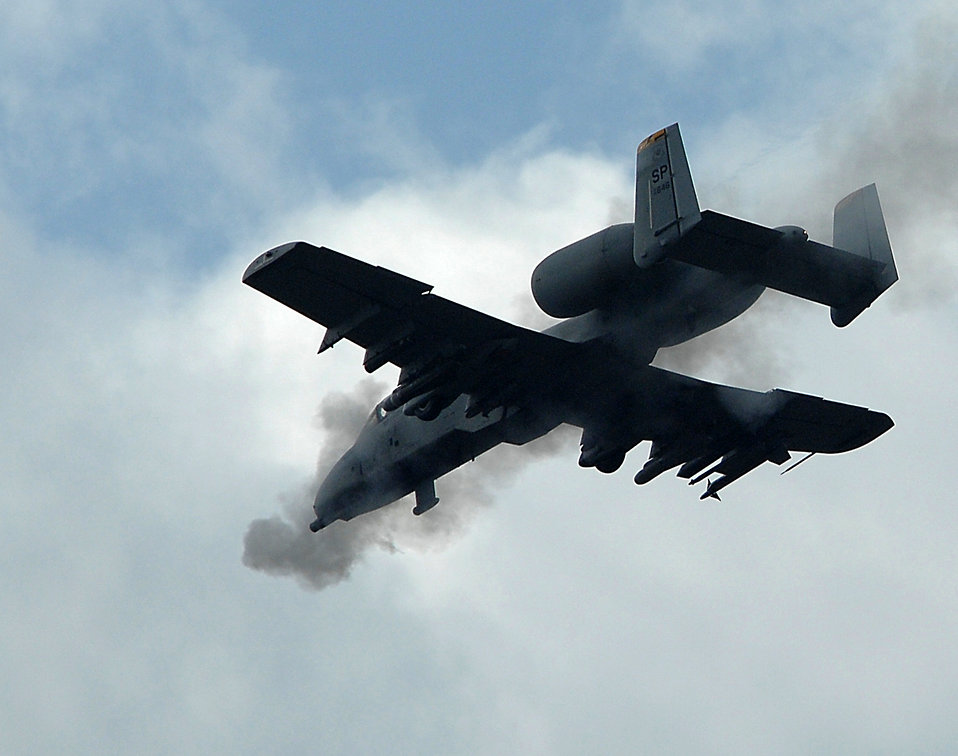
A-10 pilots take to Bulgarian skies during joint exercise

An A-10 Thunderbolt II from the 81st Fighter Squadron at Spangdahlem Air Base, Germany, fires ammunition during a training mission over Novo Selo Training Range, Bulgaria. The A-10s were used to support a joint training exercise between the U.S. and Bulgarian air forces.